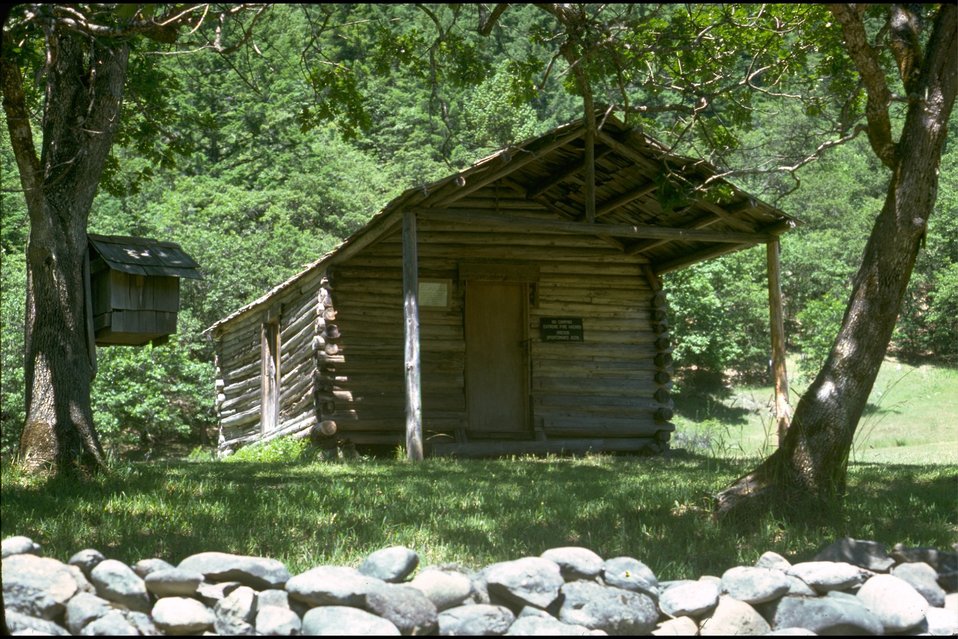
Rogue River - Winkle Bar. Zane Grey's Cabin - front. Wild section.